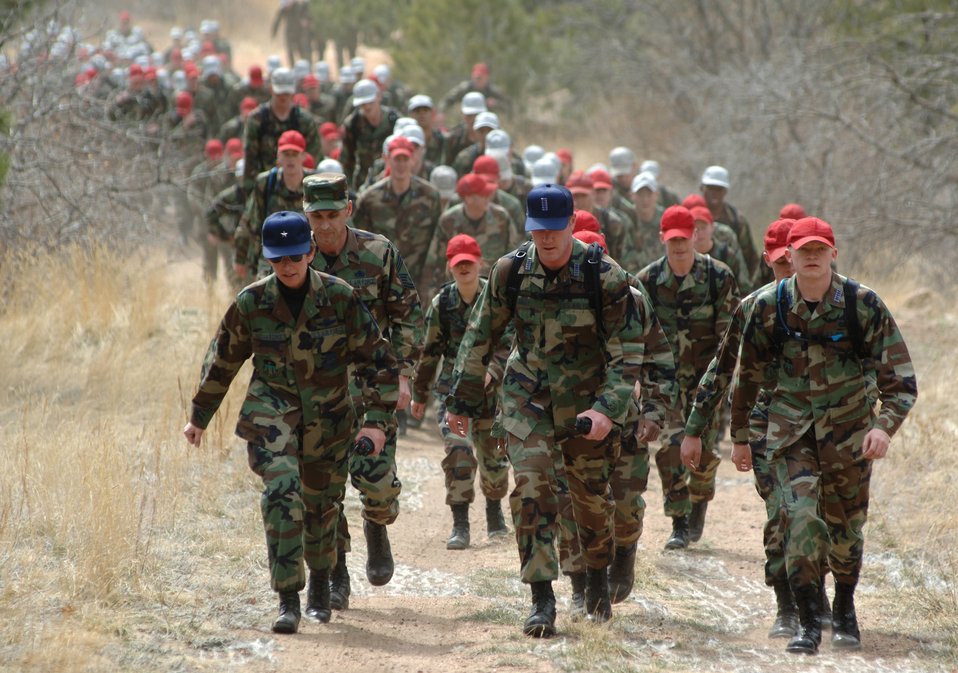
Class of 2009 formally recognized

Brig. Gen. Susan Desjardins, commandant of cadets, and Cadet 1st Class Andrew Grey, cadet wing commander, lead the march out to Jacks Valley for the Run to the Rock Saturday, March 18, 2006, at the U.S. Air Force Academy, Colo.